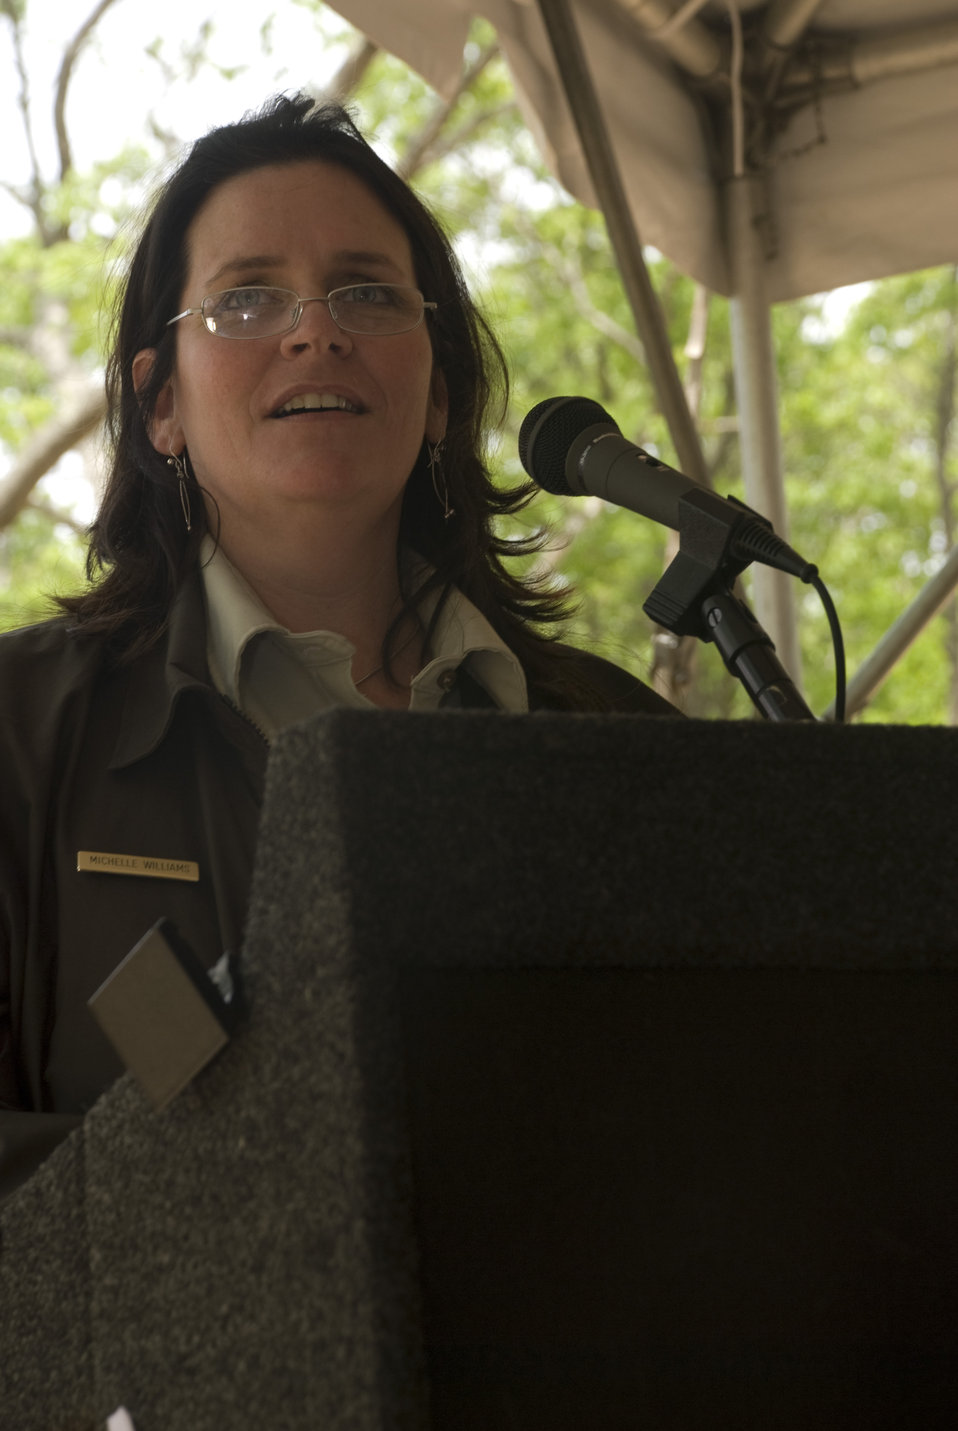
Refuge Manager - Michelle Williams